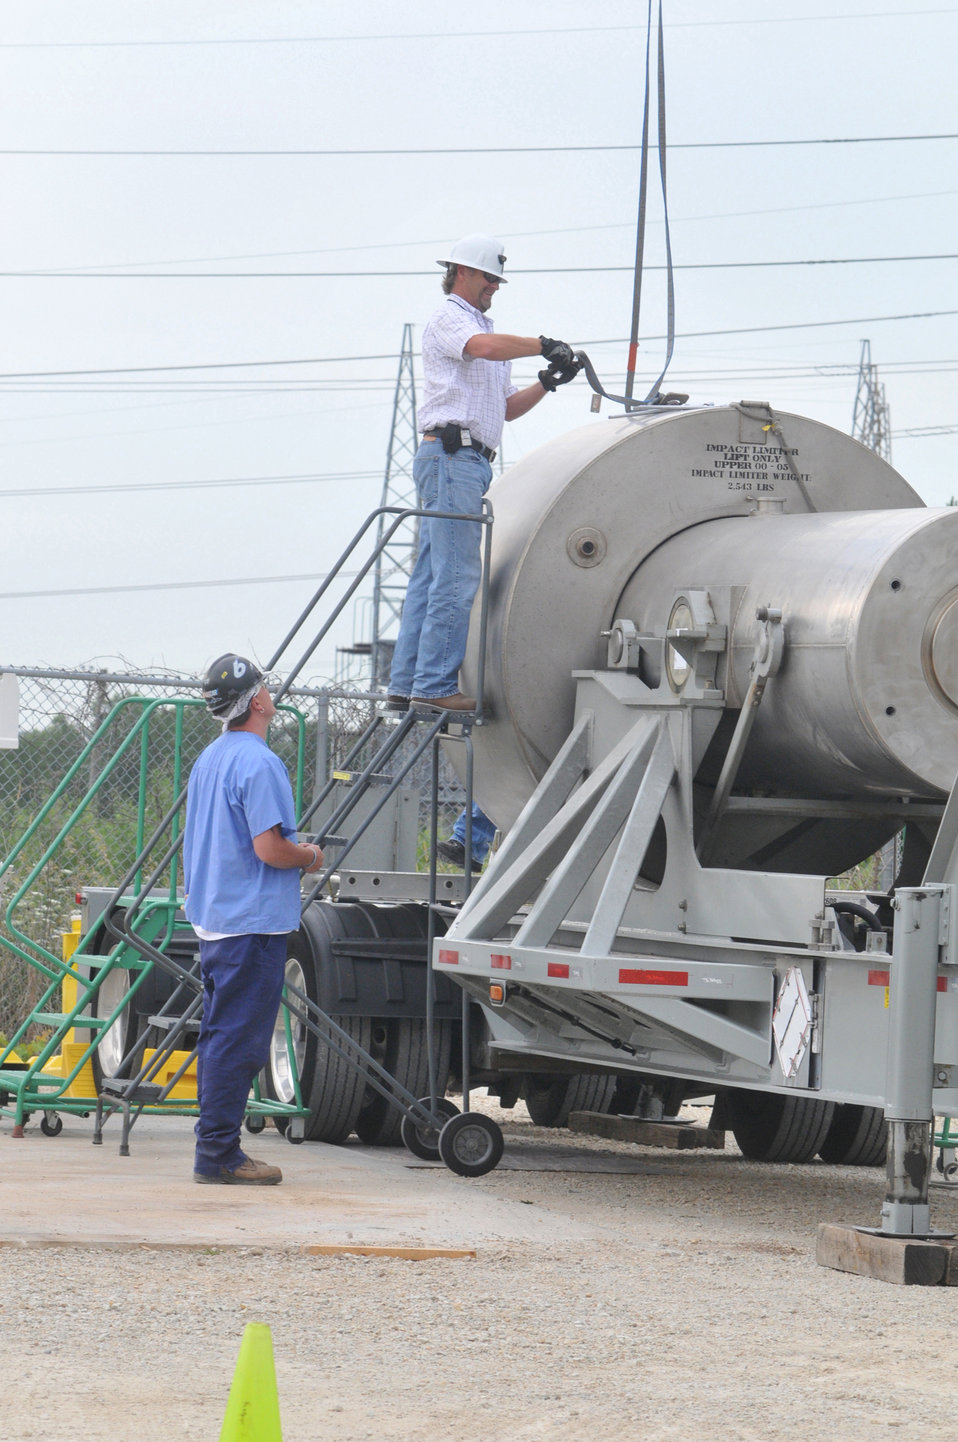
Argonne Forges Ahead in Waste Removal, Facility Demolitions with Recovery Act Help

With the help of $79 million from the Recovery Act, Argonne National Laboratory continues to dramatically reduce its inventory of radioactive materials and waste while making significant progress in its decontamination and demolition (D&D) program.